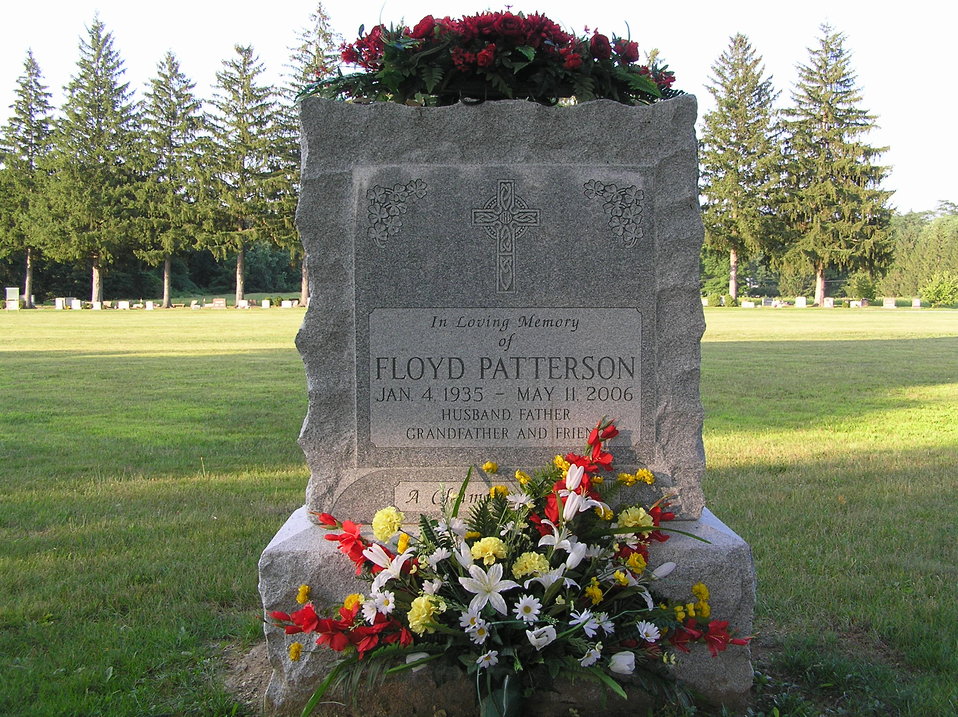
I took this photograph of the grave of Floyd Patterson in New Paltz Rural Cemetery (NY) on Tuesday, July 31, 2007.